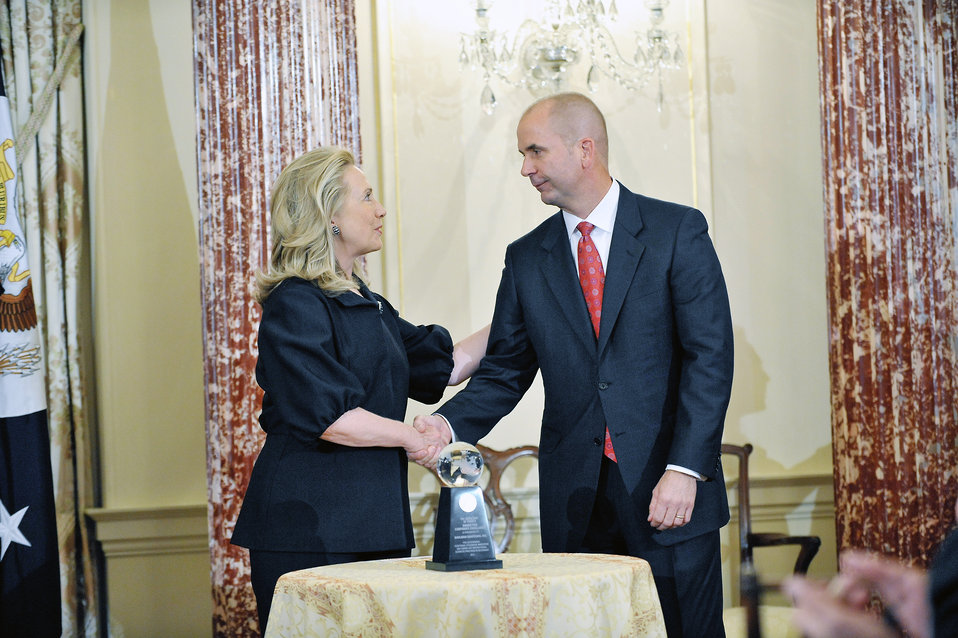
Secretary Clinton Presents the Awards for Corporate Excellence

U.S. Secretary of State Hillary Rodham Clinton presents the Awards for Corporate Excellence (ACE) to Sahlman Seafoods, Incorporated, in Nicaragua; Procter and Gamble in Nigeria; and Procter and Gamble in Pakistan, at the U.S. Department of State in Washington, D.C., on January 18, 2012.